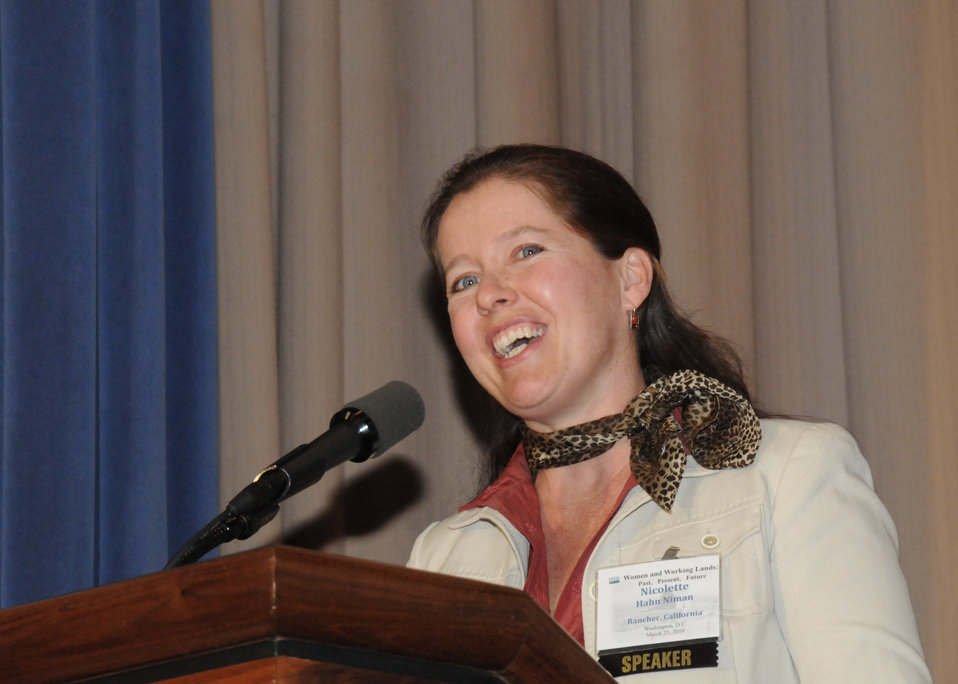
Nicolette Hahn-Niman and her husband are cattle ranchers in NorthernCalifornia. Mrs. Hahn-Niman was one of four women sitting on the panel at the Women and Working Lands: Past, Present, Future conference held in the Jefferson Auditorium at the Department of Agriculture in Washington, D. C., on Thursday, Mar. 25, 2010. USDA photo 10di1283-118